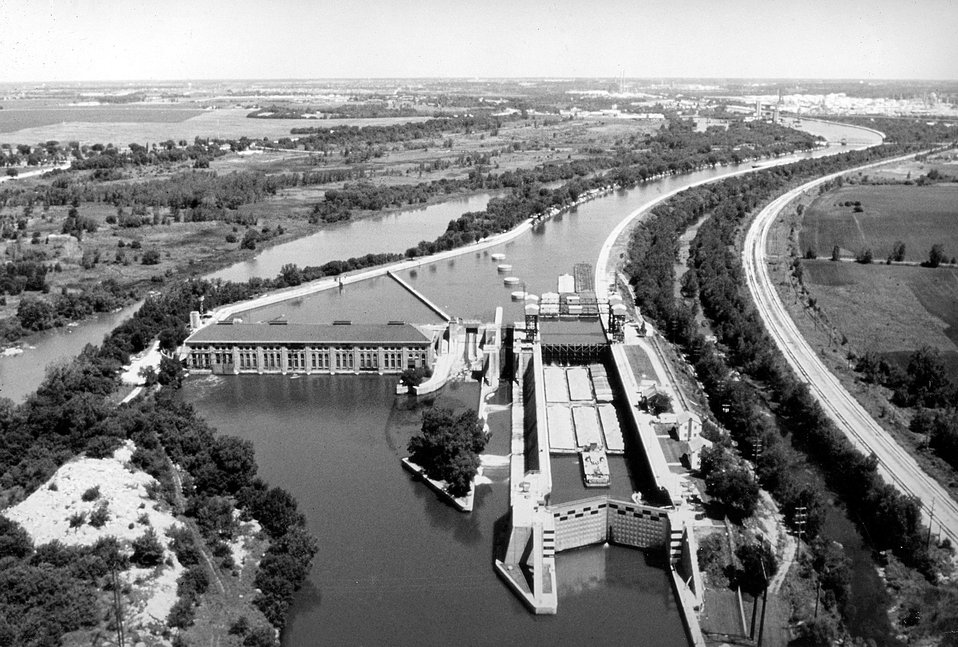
Metropolitan Sanitary District of Greater Chicago, Lockport Powerhouse & Locks Hydroelectric Plant located at Lockport, Illinois. c. undated